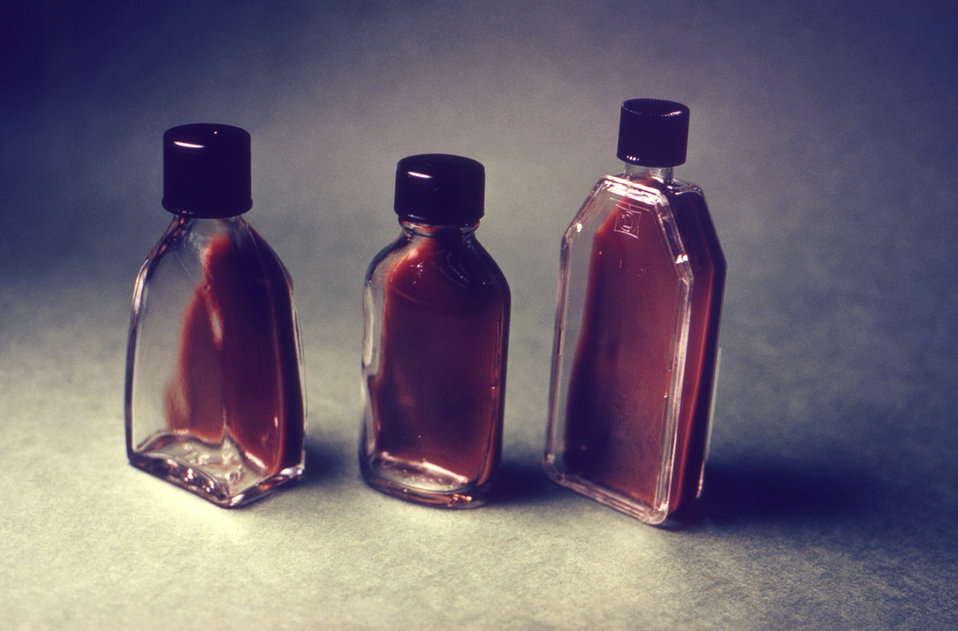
These three culture flasks contained what is referred to as 'Transgrow' medium, which is short for an experimental medium for transport and growth of Neisseria gonorrhoeae and N. meningitidis.